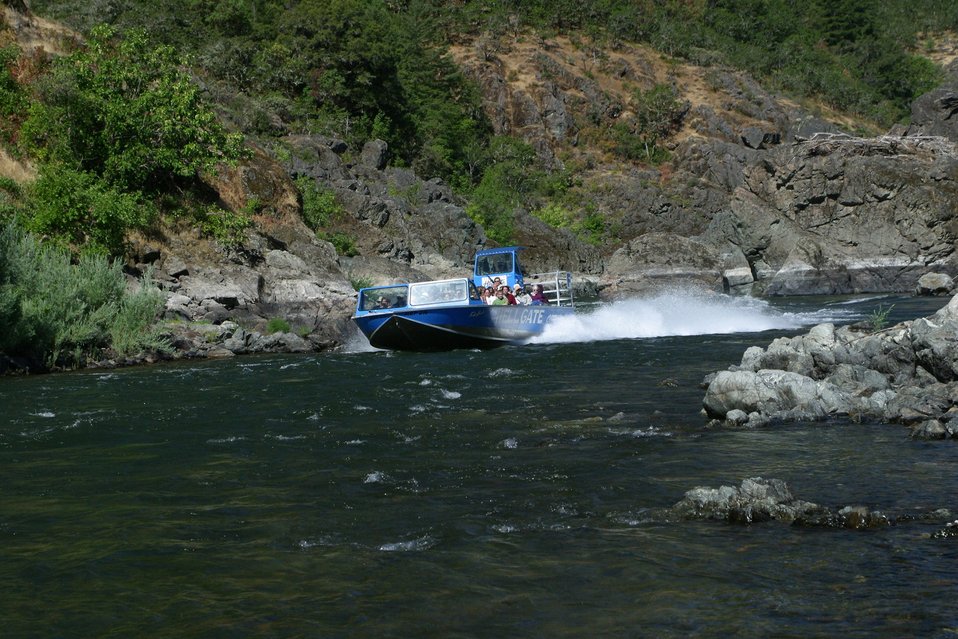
Jet boat passing by Hog Creek.